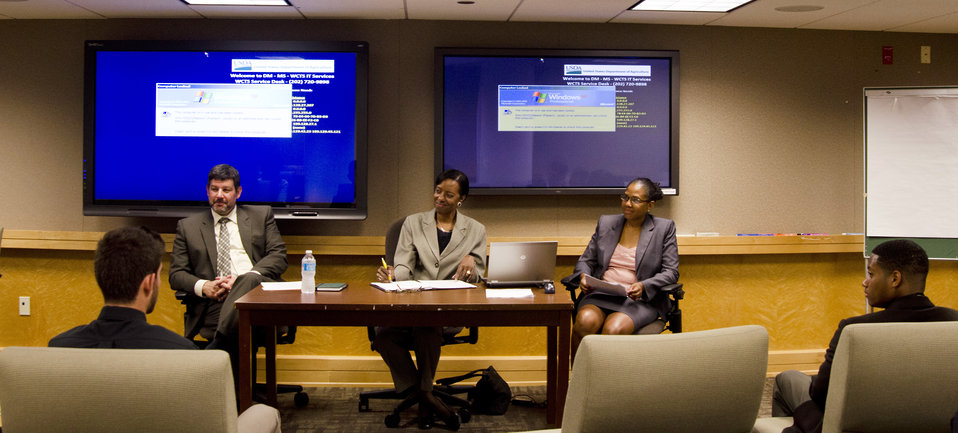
(L to R) U.S. Department of Agriculture (USDA) Office of Human Resource Management (OHRM) Virtual University, Employee Development and Training Specialist Jacob Faibisch, USDA OHRM Virtual University, Employee Development and Training Specialist Adoria Johnson, and USDA OHRM Virtual University Pathways Programs Officer and Student Intern Development Program Manager Carol Scott listen to student comments during a session of the USDA Internship Program Listening Session held in the USDA’s South Building in Washington, D.C. on Monday, August 7, 2012. The purpose of the USDA Internship Program Listening Session is to provide interns with a forum to express their views about their experiences as a USDA intern. These young people will be among the most promising future USDA leaders and participate in an individual discussion and group session that will develop leadership skills.